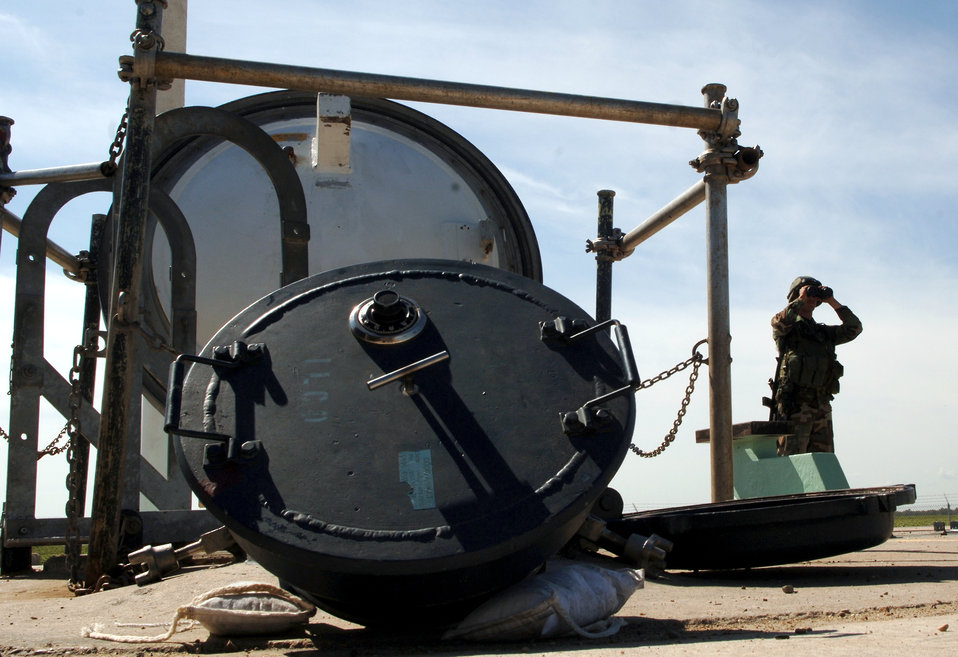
Working 'down in the hole'

Airman 1st Class Christopher Ramirez observes off-site activities at a Minuteman III intercontinental ballistic missile launch facility during the annual code change Aug. 25. The Airman is a security escort team member with the 791st Missile Security Forces Squadron at Minot Air Force Base, N.D.